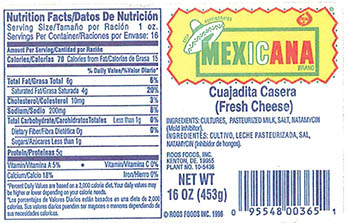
RECALLED – Variety of cheeses

February 23, 2014 – Product Recall – Roos Foods Voluntarily Recalls Variety of Cheeses (listed below) Due to Possible Health Risk.